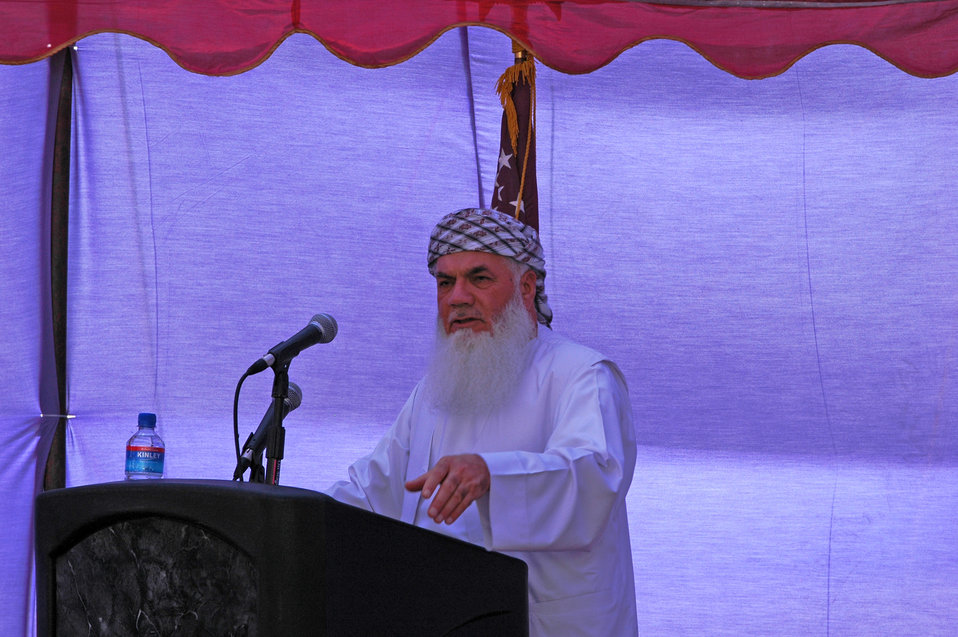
105 MW Tarakhil Power Plant Handover